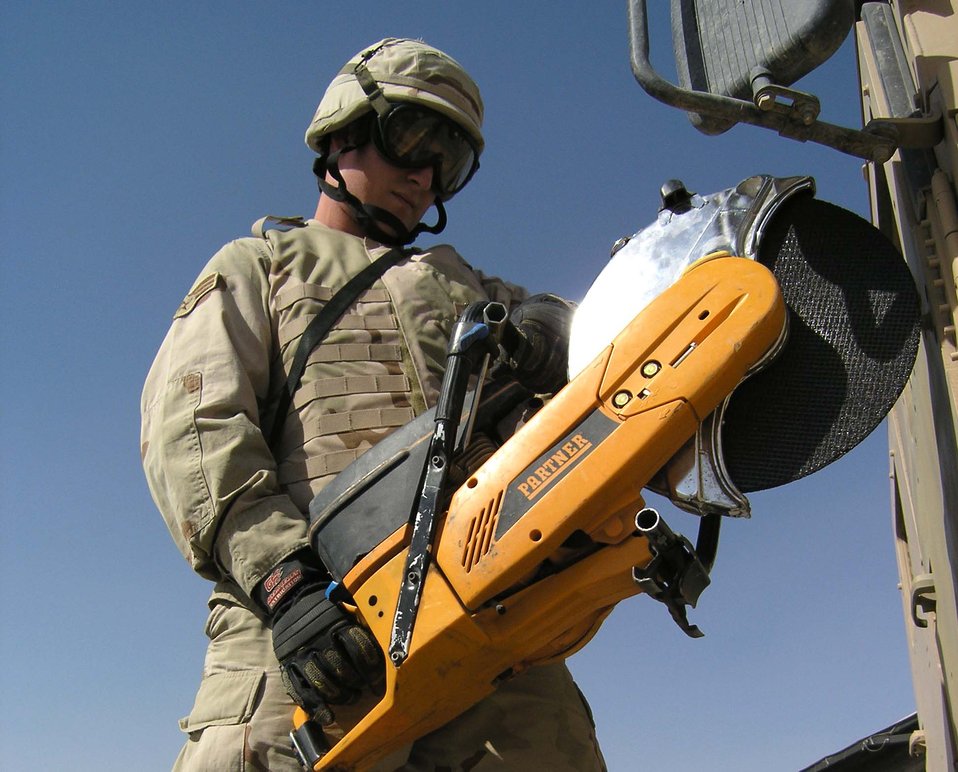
Air Force Birthday

Senior Airman Jurle Gaver prepares to cut the door off a Humvee using a K-12 partner saw Sept. 18. The saw is used to help extract victims trapped inside a vehicle. Airmen Gaver is assigned to the 407th Civil Engineer Squadron?s Fire Protection Flight at Ali Base, Iraq.